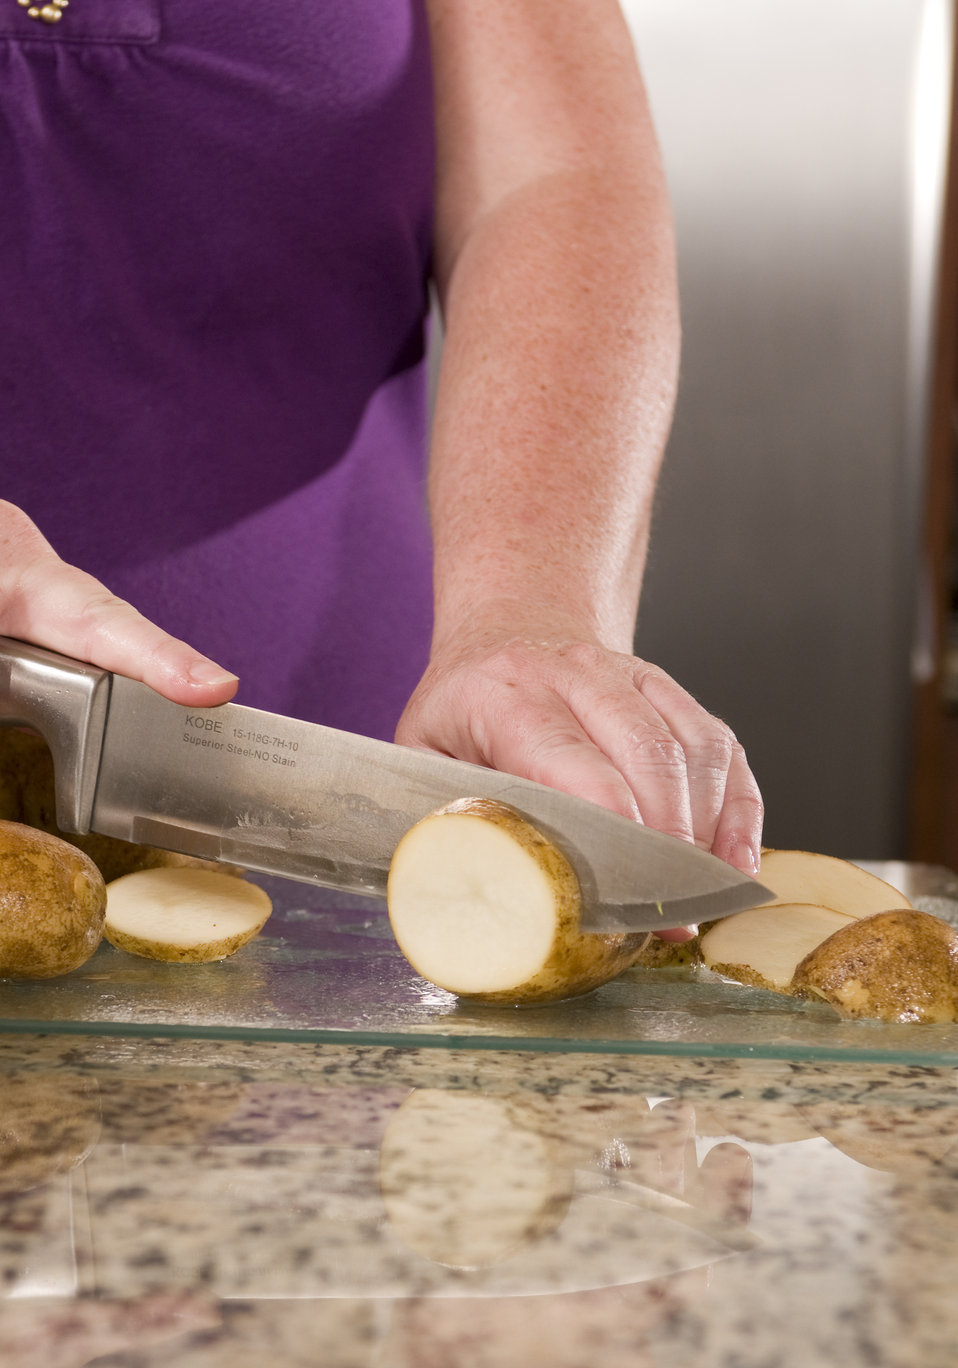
Here we see a woman in a kitchen setting photographed in the process of preparing a number of just-washed white potatoes, atop a clean glass cutting board. It is very important to prepare foods in as clean environment as possible, thereby, minimizing the possibility of including foodborne contaminants into the food preparation process.